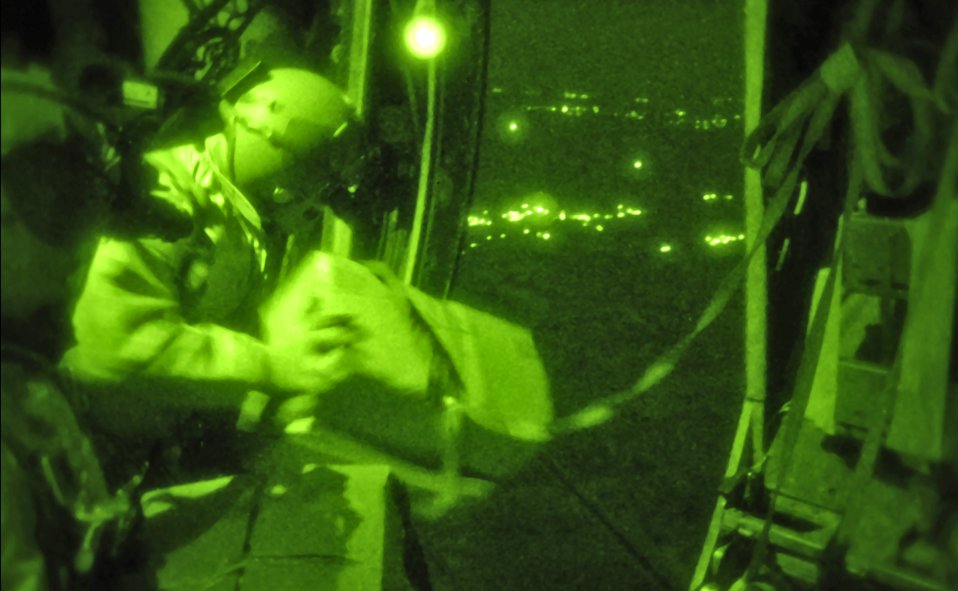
Leaflets urge Iraqis to help capture armed insurgent militia members

Senior Airman Brandon Fertig and Tech. Sgt. Alex Garrett, loadmasters deployed to the 40th Expeditionary Airlift Squadron at an air base in Southwest Asia, throw a box of leaflets out the door of a C-130 Hercules over a designated airdrop zone. The leaflets provide coalition forces on the ground with a means to communicate with citizens in the area to aide in the capture of insurgents. The Airmen are deployed from Dyess Air Force Base, Texas.